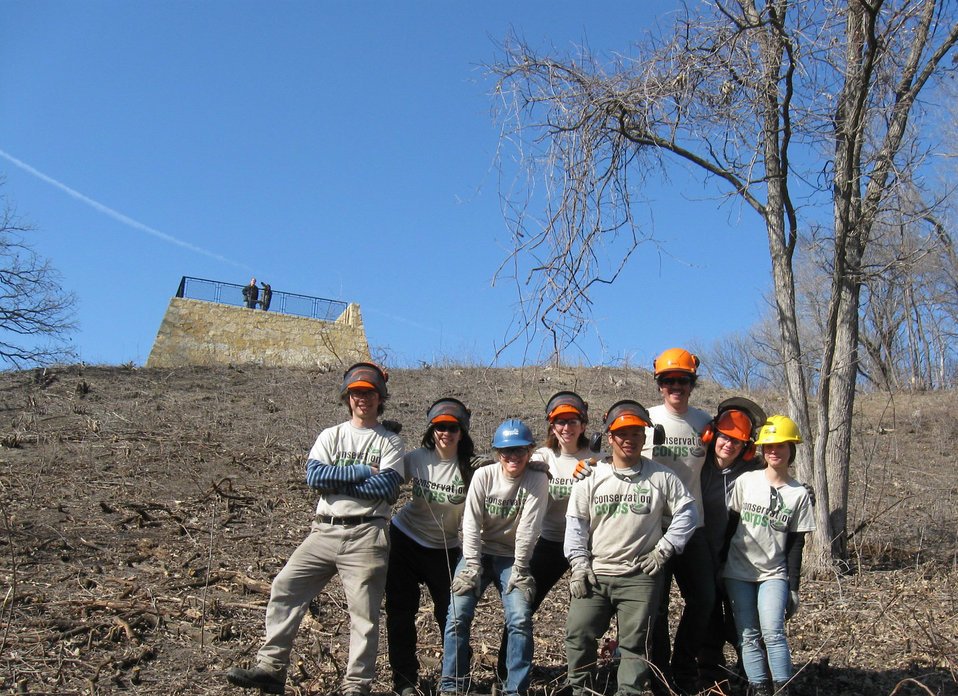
Clear Hillside

After: The crew that cleared the hillside below the Visitor Center overlook.